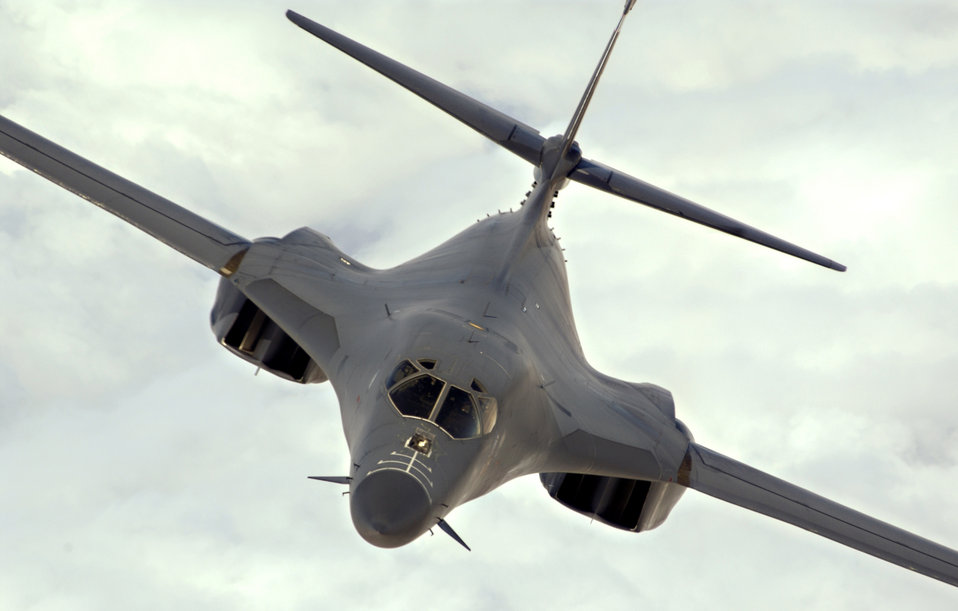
Lancer in flight

OVER NEVADA -- A B-1B Lancer from the 37th Bomb Squadron, Ellsworth Air Force Base, S.D., streaks through the sky. Capable of carrying the largest payload of both guided and unguided weapons in the Air Force inventory, the multi-mission Lancer is the backbone of America's long-range bomber force. It can rapidly deliver massive quantities of precision and non-precision weapons against any adversary, anywhere in the world, at any time.